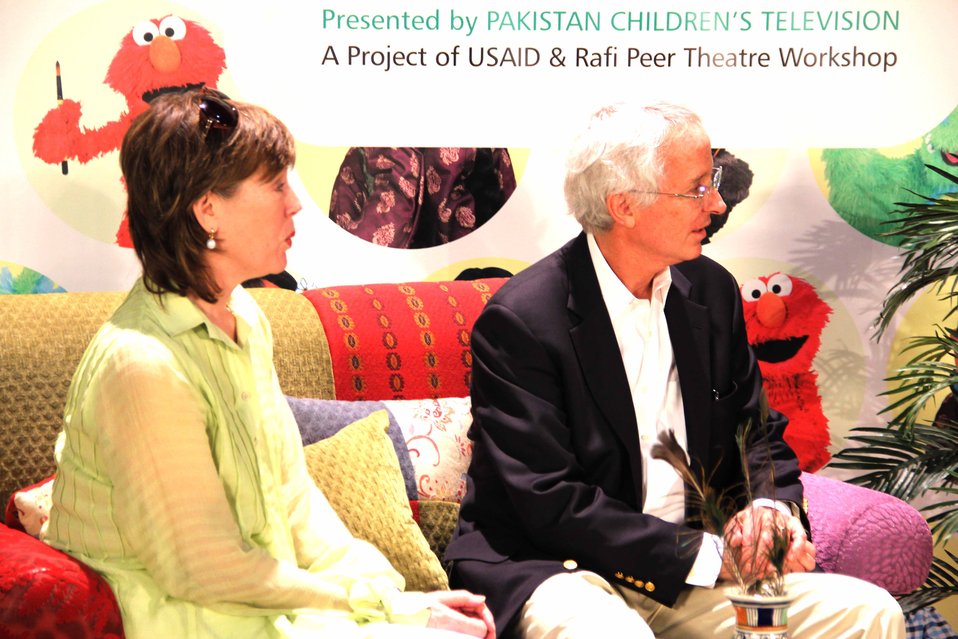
U.S. Ambassador’s Visit to Sim Sim Hamara Highlights U.S. Commitment to Improved Children’s Education in Pakistan at Lahore on 28 April, 2012